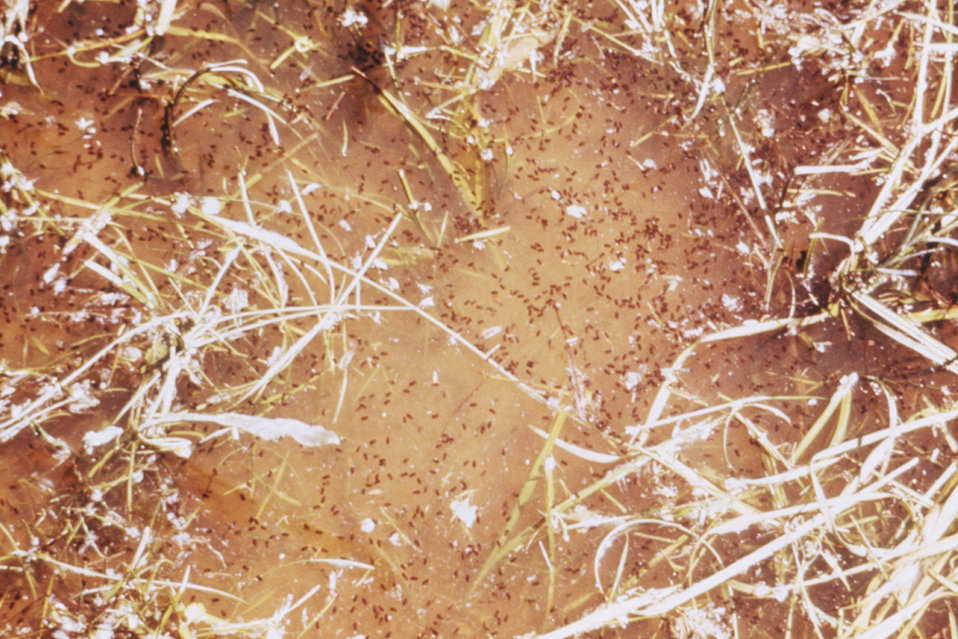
This 1976 photograph shows numerous mosquito pupae, or late stage larvae, in vegetated water located in Albany County, Wyoming.